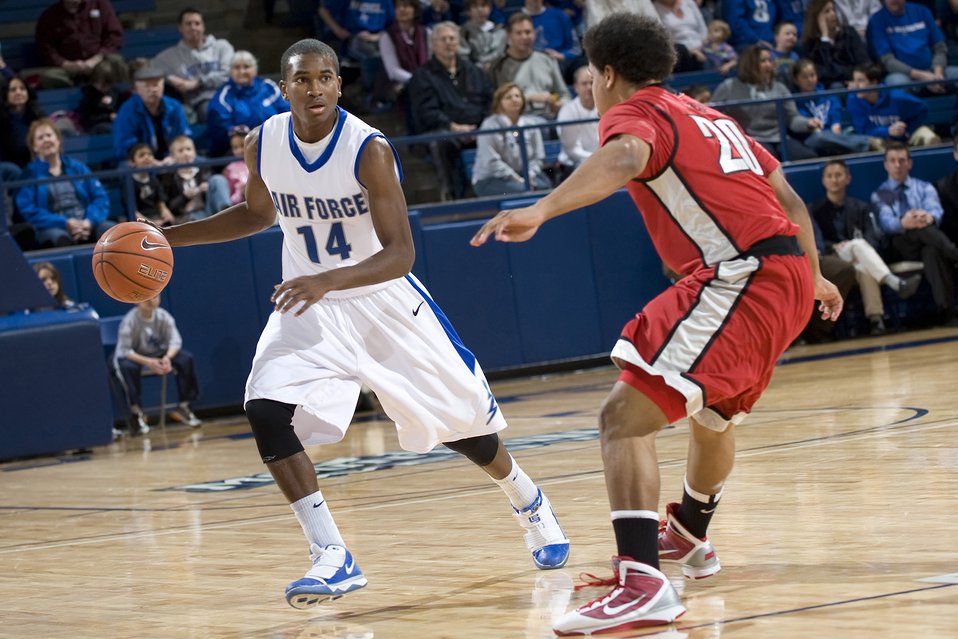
Falcons fall to Running Rebels

Falcon freshman forward Michael Lyons attempts to drive past UNLV guard Steve Jones as Air Force went against the University of Nevada Las Vegas Running Rebels Feb. 27, 2010, at the U.S. Air Force Academy's Clune Arena. UNLV went on to defeat the Falcons by a score of 77 to 47.